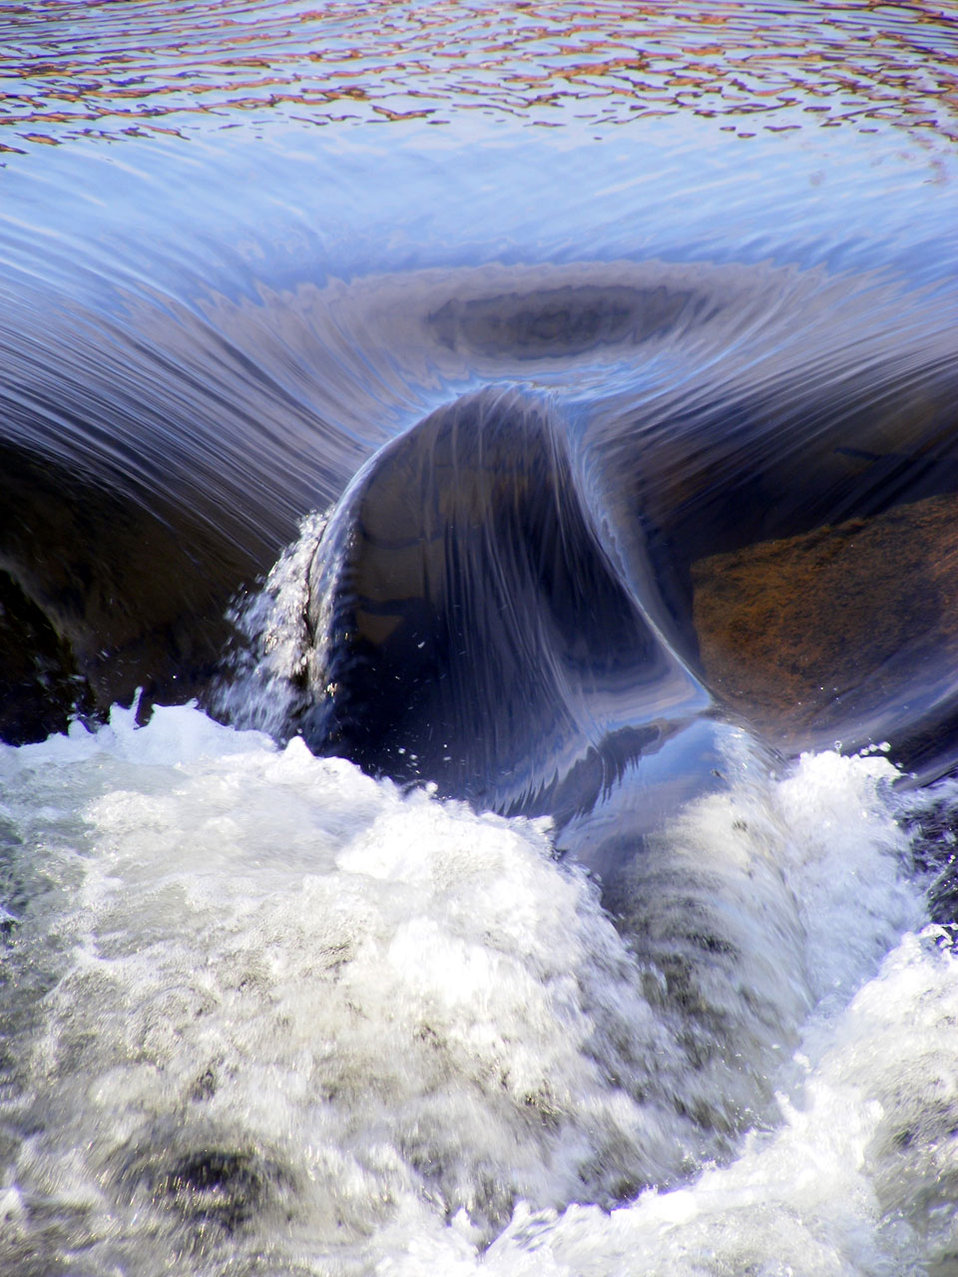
Water surge on the river nith.